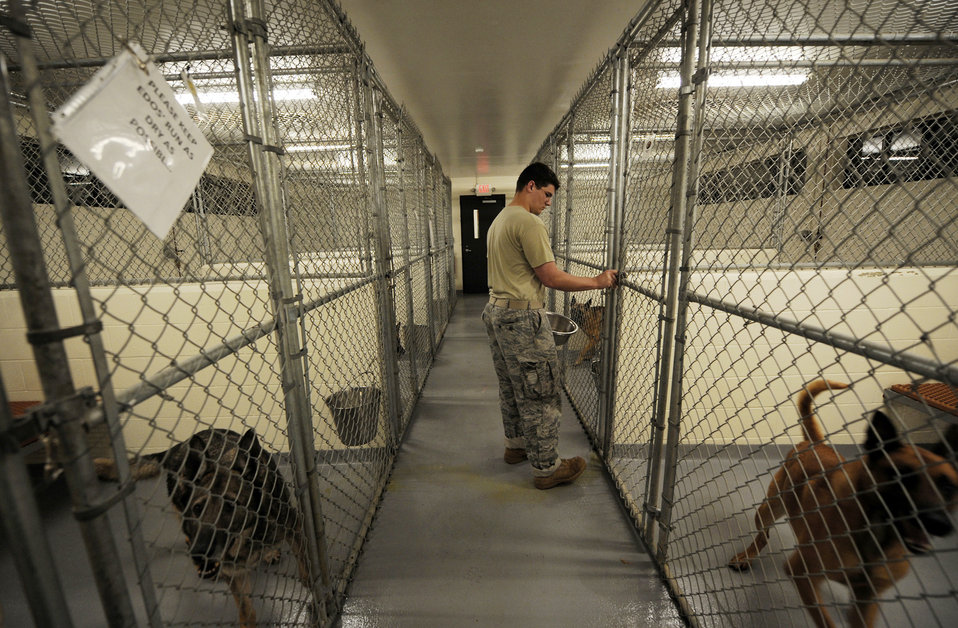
New dog and handler develop bond

Senior Airman Beaun Clegg feeds dogs in the early morning July 9 at Moody Air Force Base, Ga. Airman Clegg fed the dogs before a 4-mile ruck march. He is a military working dog handler with the 822nd Security Forces Squadron.